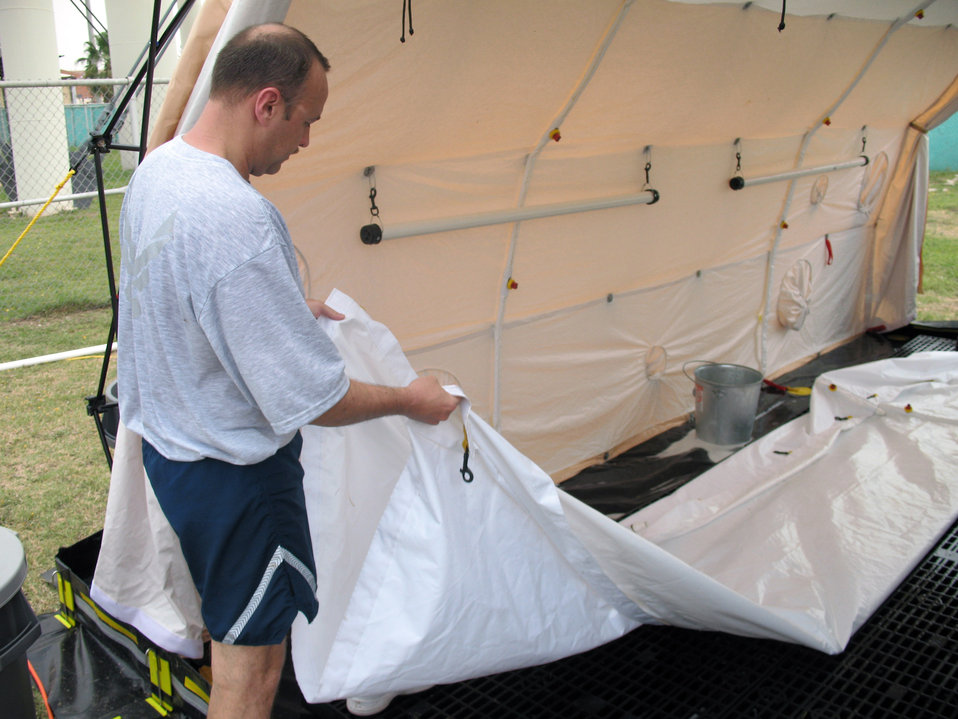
Incirlik medics train with new decon field equipment

Master Sgt. Tim Allen helps set up the new in-place patient decontamination capability during an exercise May 31 at Incirlik Air Base, Turkey. The IPPDC allows Incirlik AB medics to decontaminate patients in the field during a chemical or biological attack. Sergeant Allen is the 39th Medical Group decontamination team chief.